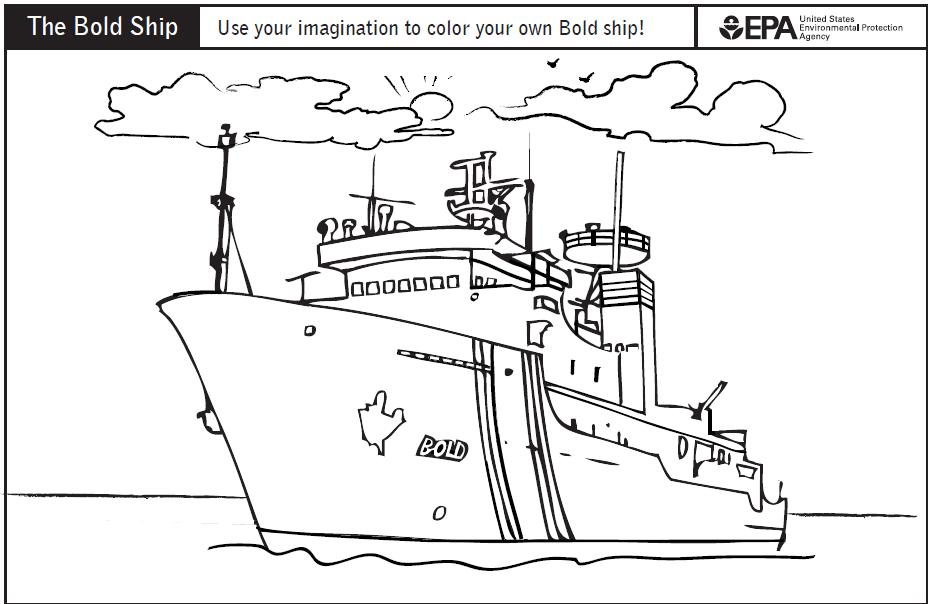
Color the Bold!